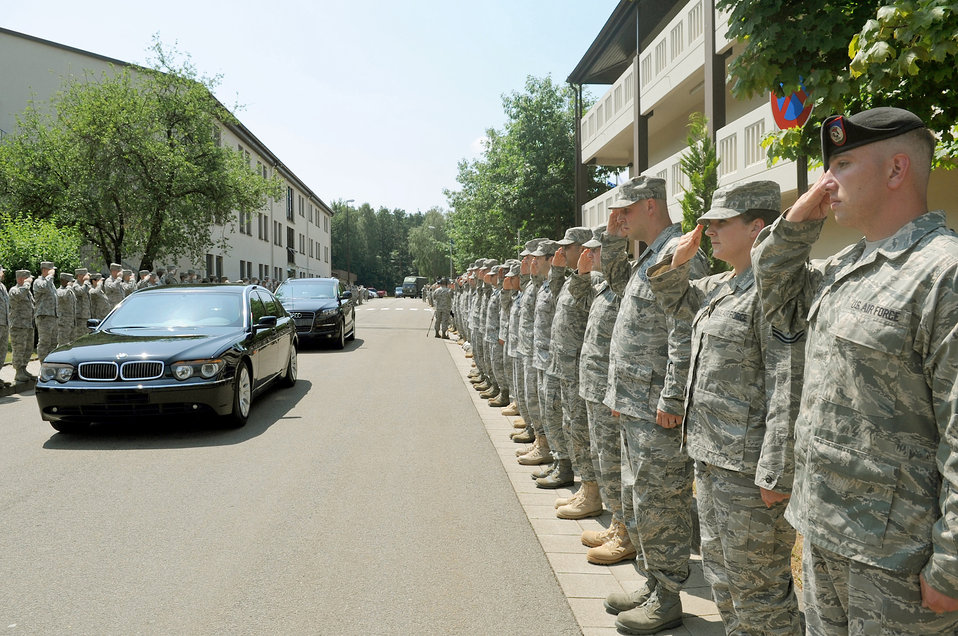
USAFE enlisted honor general with Order of the Sword

U.S. Air Forces in Europe Airmen salute Gen. Roger A. Brady July 14, 2010 as he leaves the Kisling NCO Academy auditorium after receiving his Order of the Sword invitation at Kapaun Air Station, Germany. General Brady is the U.S. Air Forces in Europe commander.